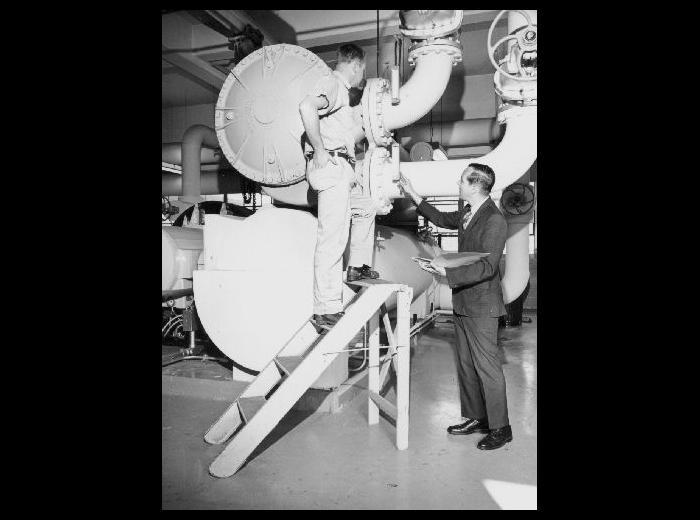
Sanitarian Activities - Inspection.